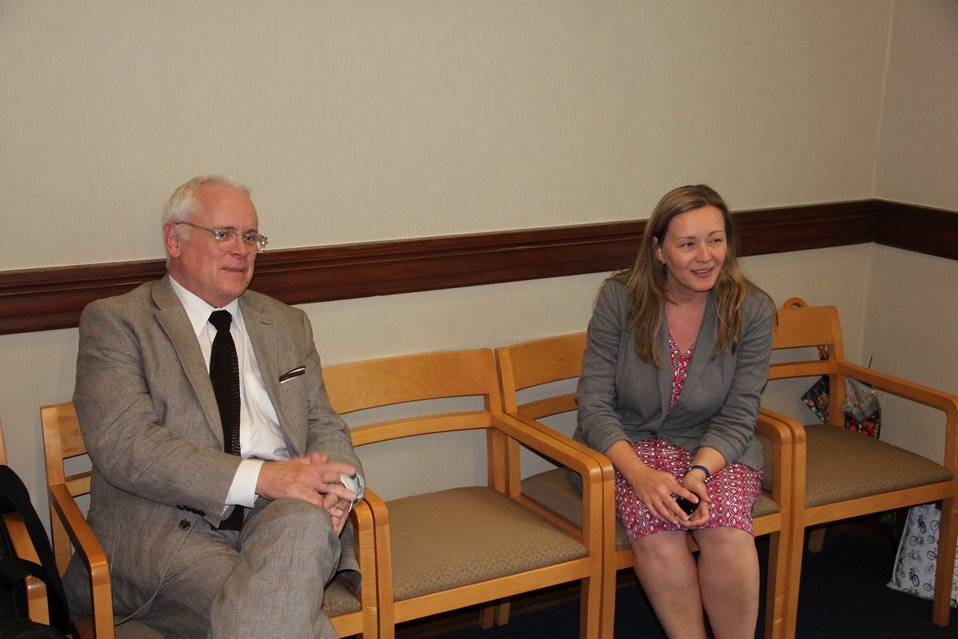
Jim Gardner, Executive for Legislative Archives, Presidential Libraries and Museum Services, meets with Dorothy Dougherty in New York; Location: National Archives at New York City, New York, New York